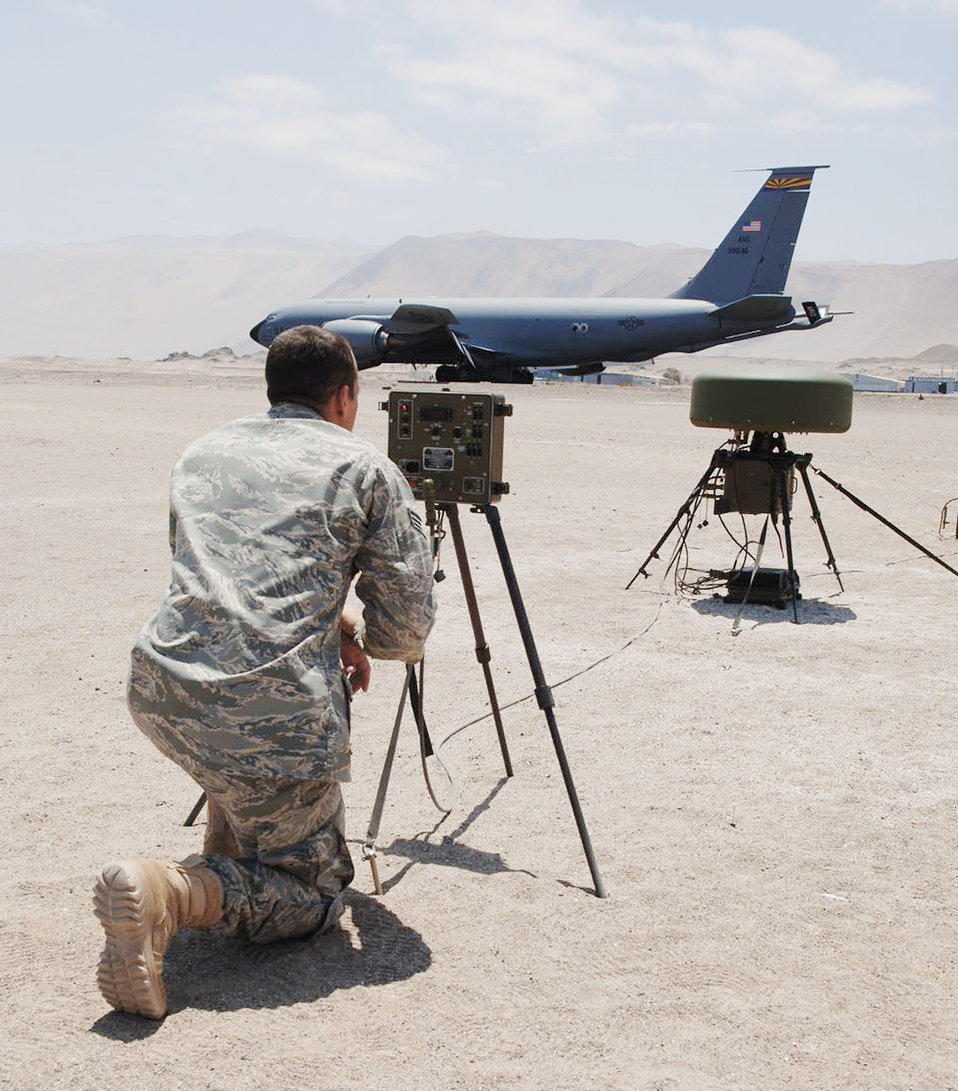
Navigation aids keep F-15s on course

Senior Airman Nelson Santiago performs an hourly check on a portable tactical navigation aid during Exercise Salitre, a Chilean-led multinational exercise focused on interoperability between Chile, the United States, France, Argentina and Brazil Oct. 23, 2009, in Iquique, Chile. The TACAN allows U.S. F-15 Eagle pilots to locate the two operating airfields involved in the exercise and orient themselves for landing. The TACAN is typically used by combat controllers to establish airfields in austere environments. Airman Santiago is a 23rd Special Tactics Squadron airfield systems technician.